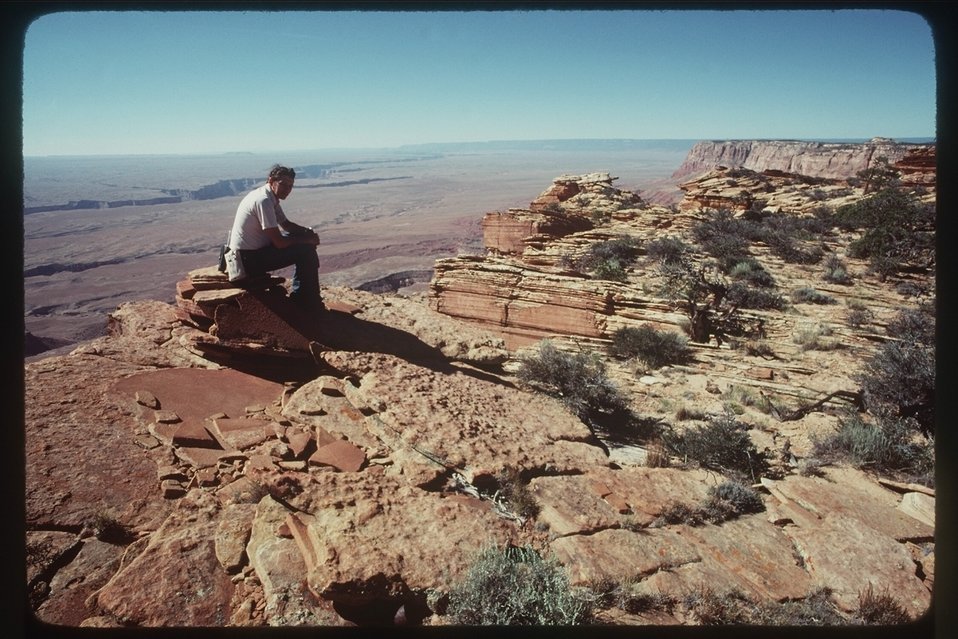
Nationally known for its beauty, the Paria Canyon has towering walls streaked with desert varnish, huge red rock amphitheaters, sandstone arches, wooded terraces, and hanging gardens. The 3,000-foot escarpment known as the Vermilion Cliffs dominates the remainder of the wilderness with its thick Navajo sandstone face, steep, boulder-strewn slopes and rugged arroyos. Some of the best canyon hiking opportunities on the Colorado River Plateau are found here.